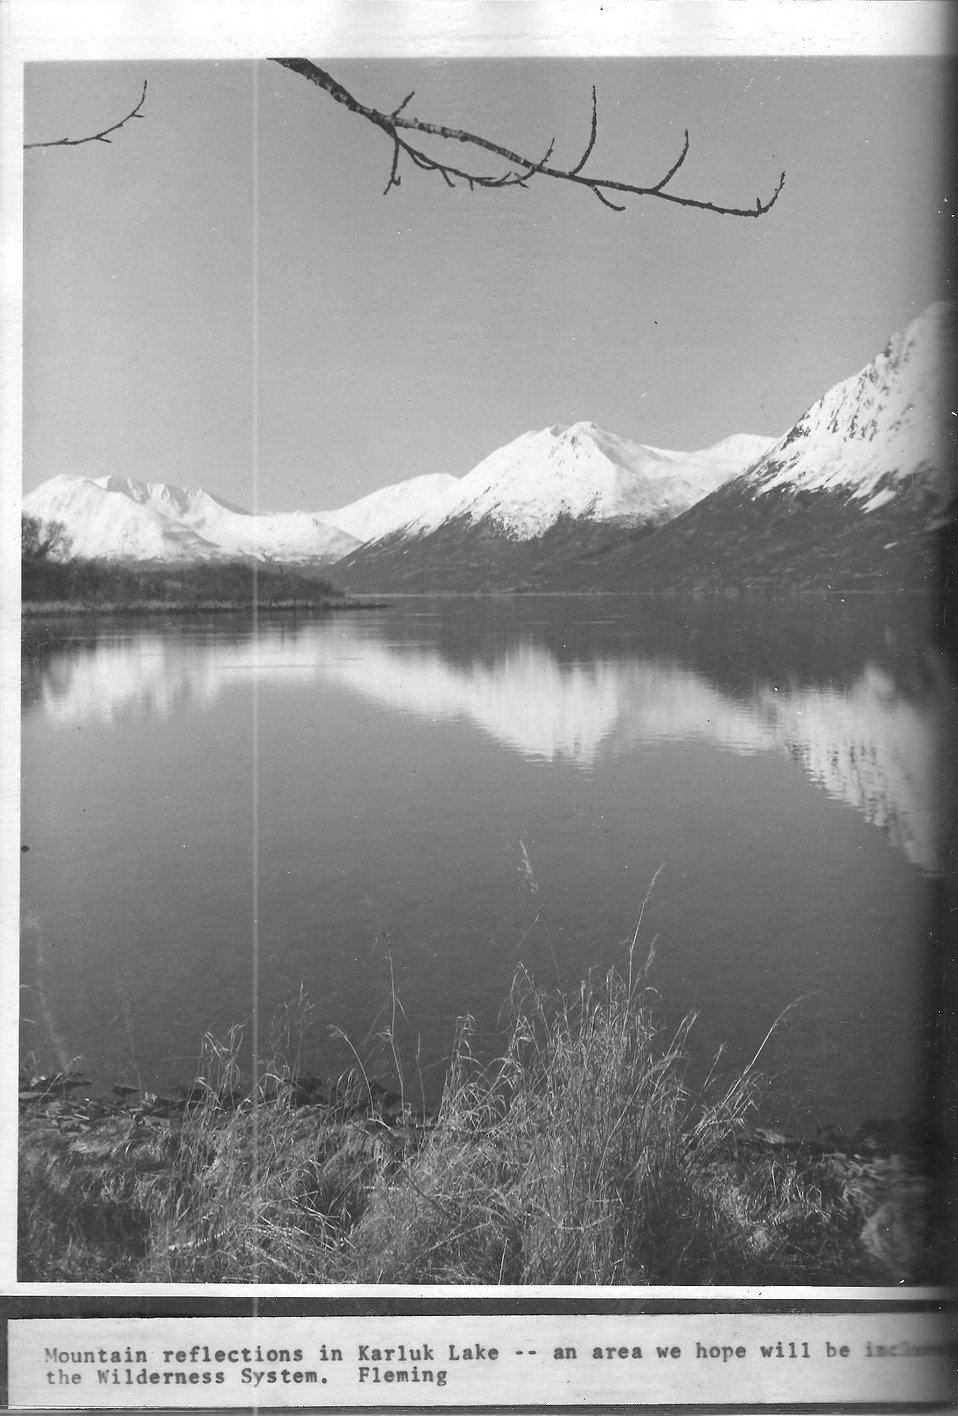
(1970) Karluk Lake

Credit: USFWS

Source and Contact: Kodiak National Wildlife Refuge